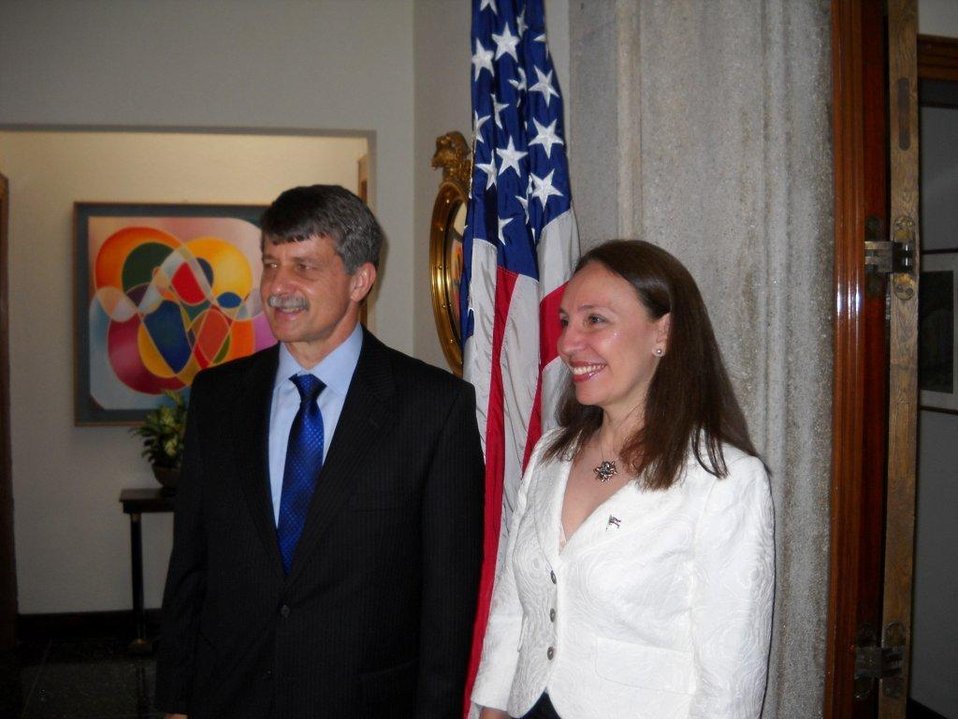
July 4th Celebration at U.S. Embassy in Guatemala

U.S. Ambassador to Guatemala Stephen McFarland and Mrs. McFarland wait to welcome guests to their residence to the U.S. Independence Day celebration in Guatemala City, Guatemala, on July 2, 2010.